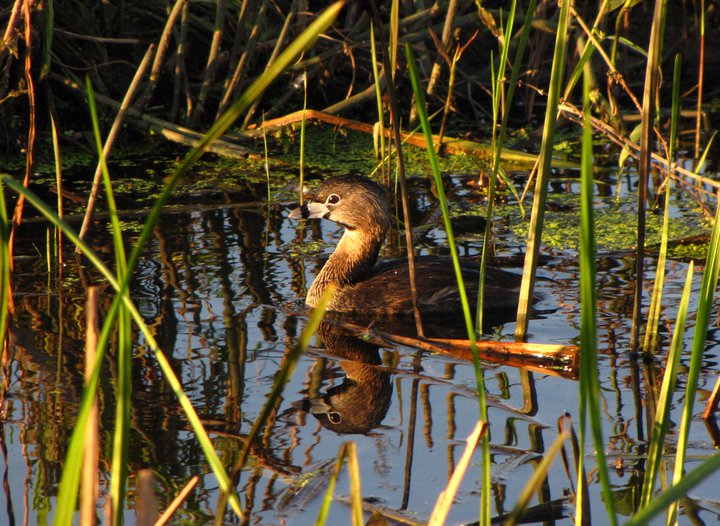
piedbilled grebe

Port Louisa National Wildlife Refuge